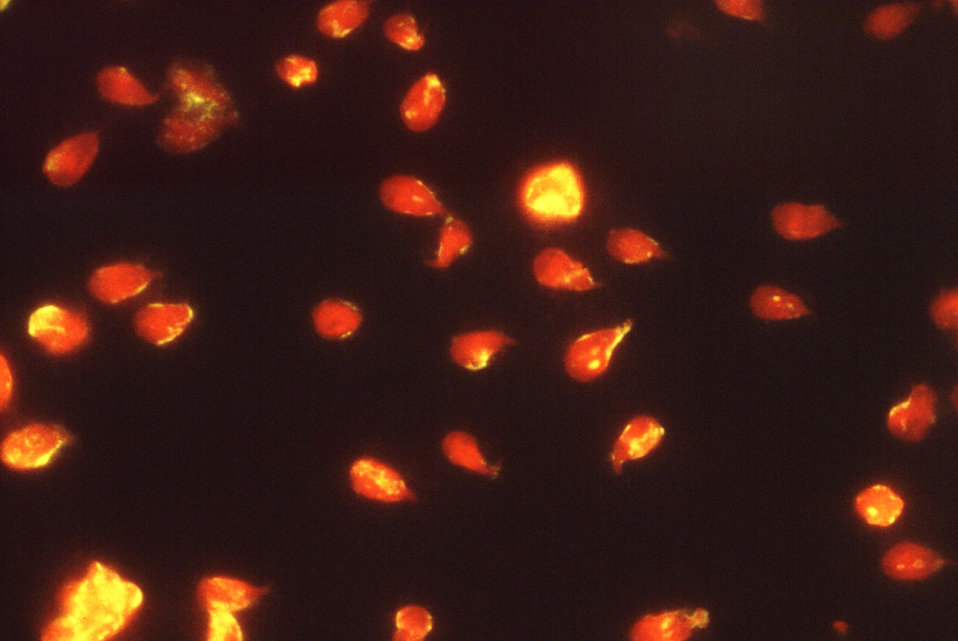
This photomicrograph depicts Giardia lamblia parasites using an indirect immunofluorescence test for giardiasis.